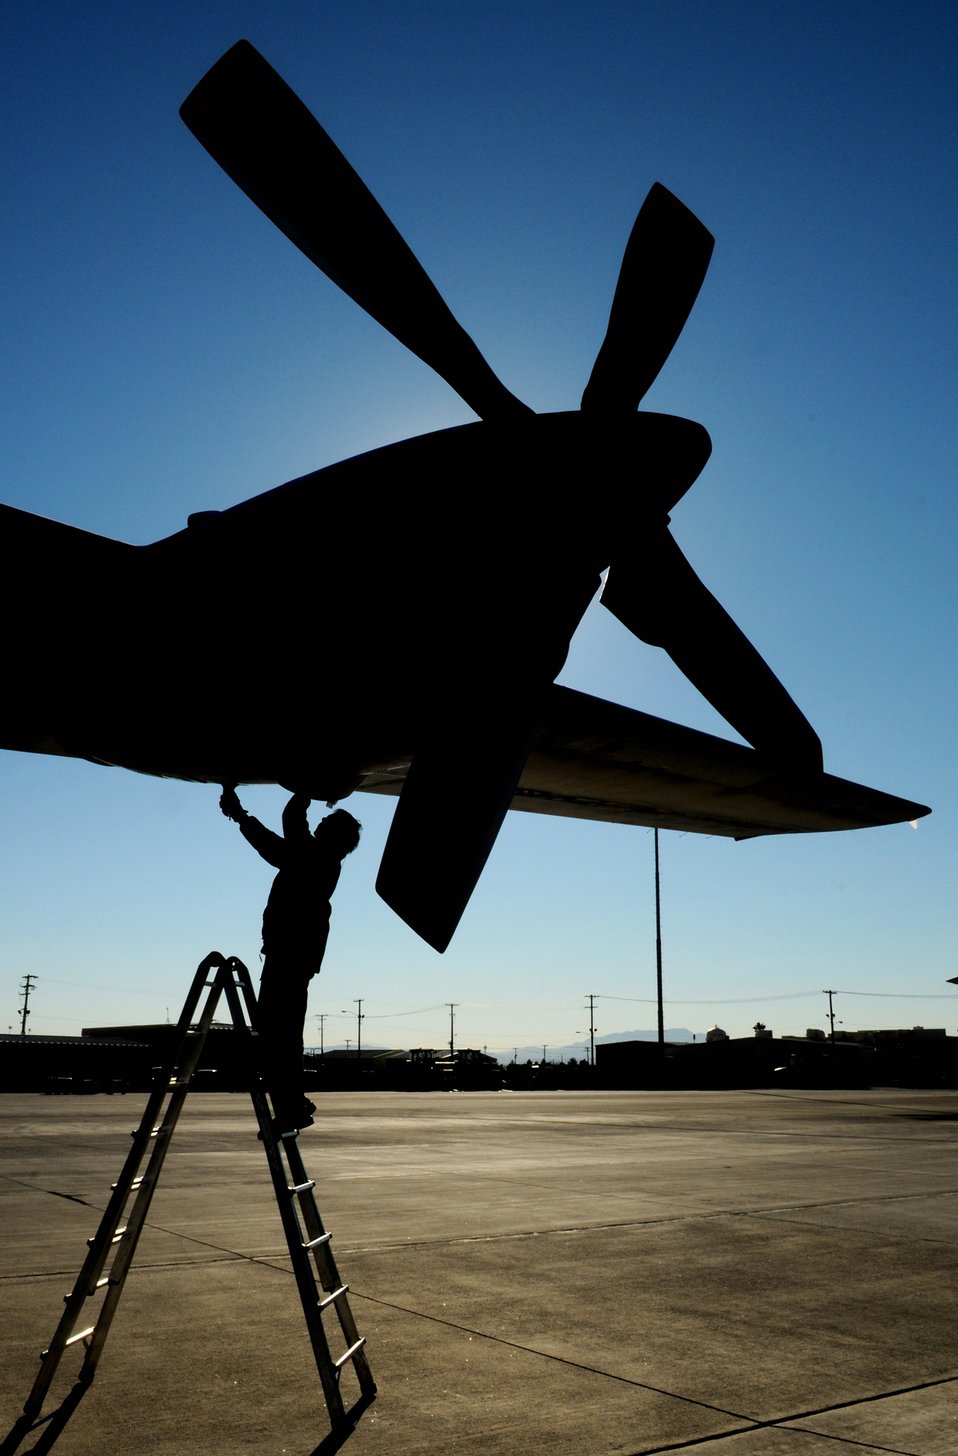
Finishing touches

Belgian air force Adjutant Ludo Geens works on a C-130 Hercules Feb. 2, 2011, after completing a mission during exercise Red Flag 11-2 at Nellis Air Force Base, Nev. The C-130 and Adjutant Geens are deployed from Melsbroek Air Base, Belgium, to participate in the combined exercise for U.S. service members and their allies.